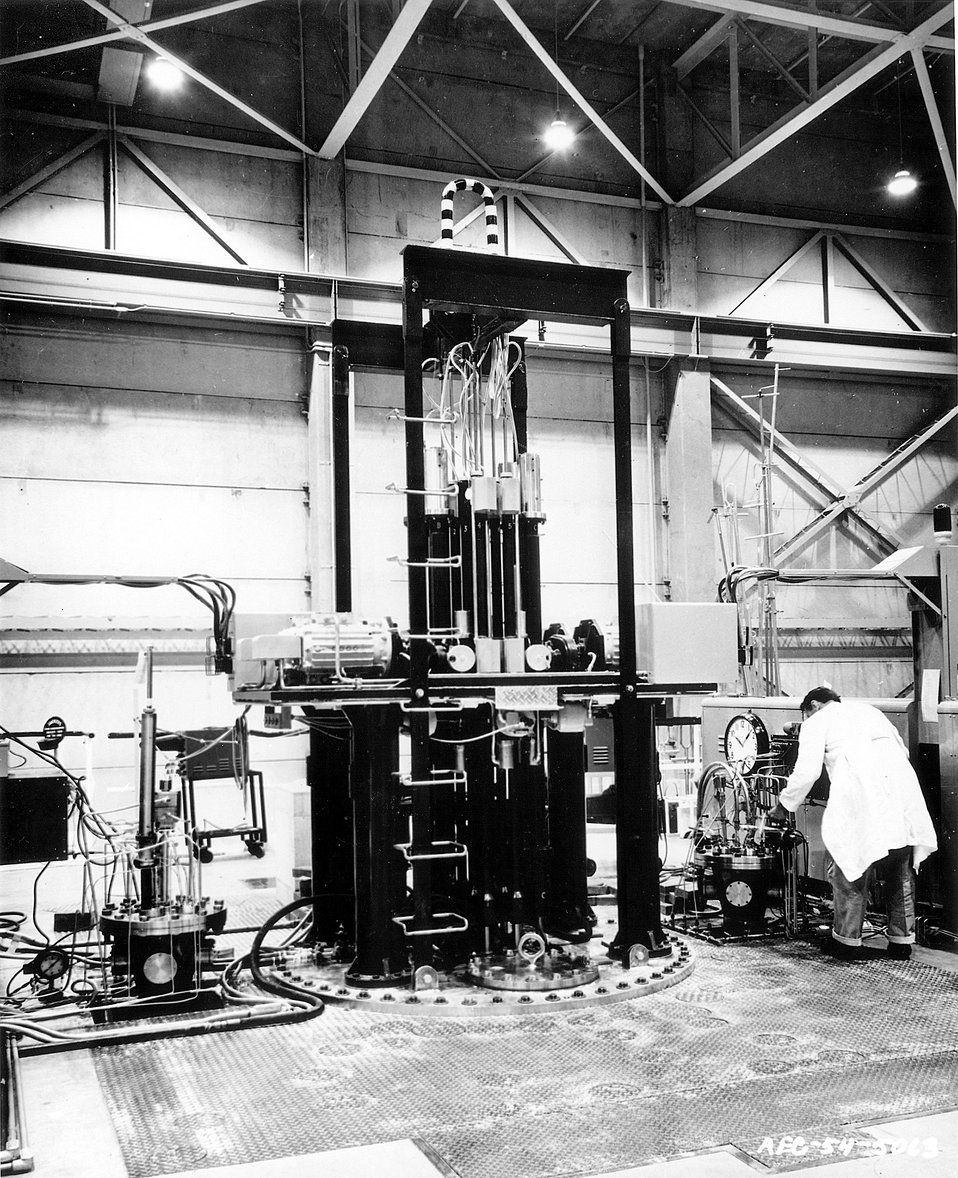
Top plug of the Materials Testing Reactor... The framework supports the control rod driving mechanisms. The flanges right and left permit entrance of cooling tubes and instrument lines to experiments inside. Circa 1954.